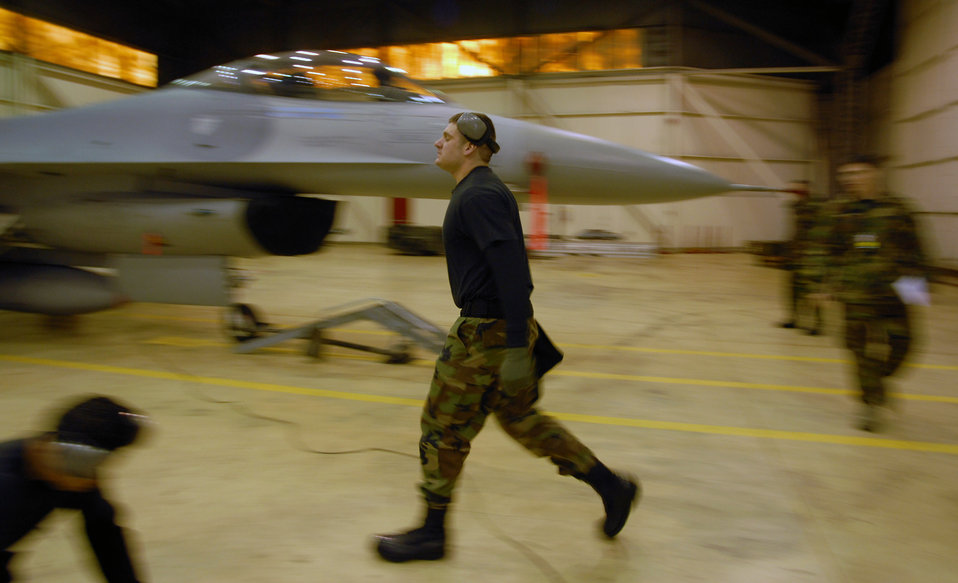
Heavy metal

Senior Airman Jon Michael Schwartz retrieves tools during the weapons load competition Dec. 14 at Kunsan Air Base, South Korea. This was the final weapons load competition between the 80th and 35th Fighter squadrons for 2007. Airman Schwartz is assigned to the 8th Aircraft Maintenance Squadron.